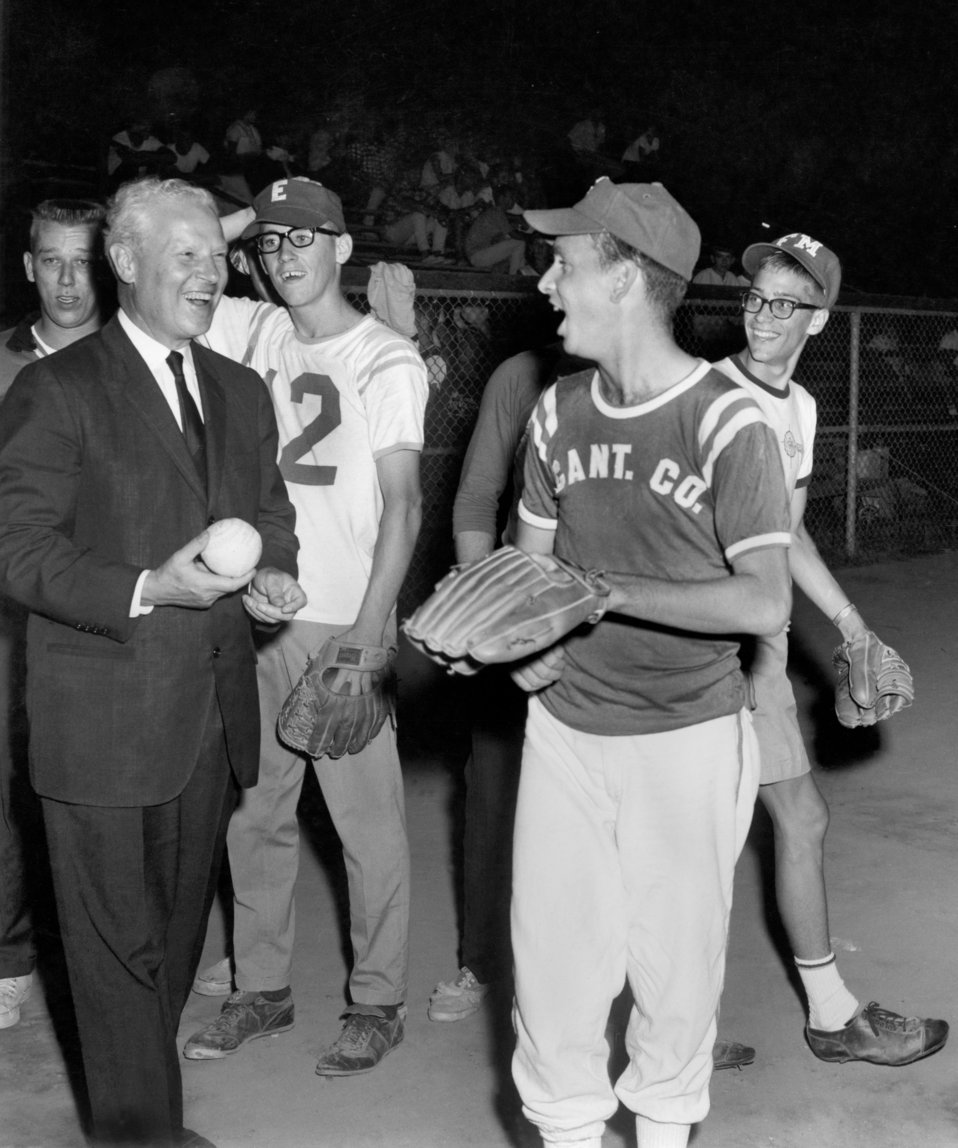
SINB Conference Softball Game Sen. Albert Gore, Sr. Oak Ridge 1965

65-550 DOE photo Ed Westcott 8-18-1965 Oak Ridge Tennessee